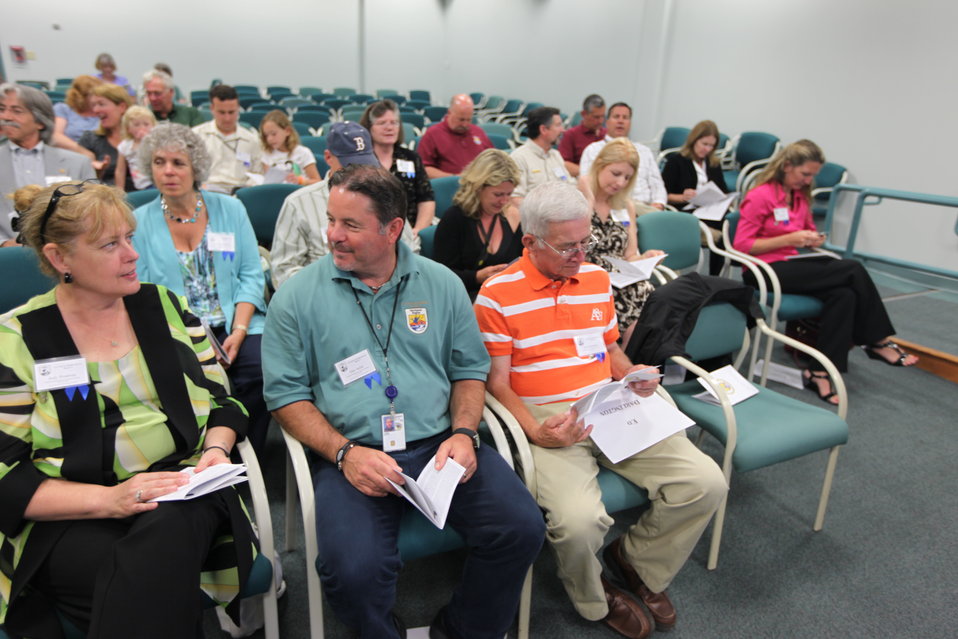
Northeast Region Employee Appreciation Awards